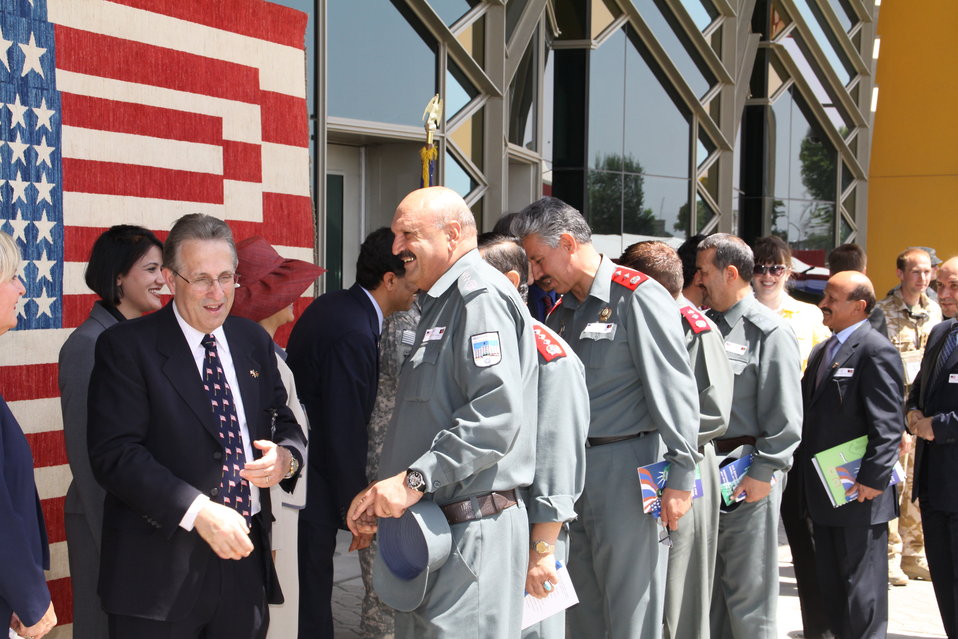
Kabul Official July 4th Celebration